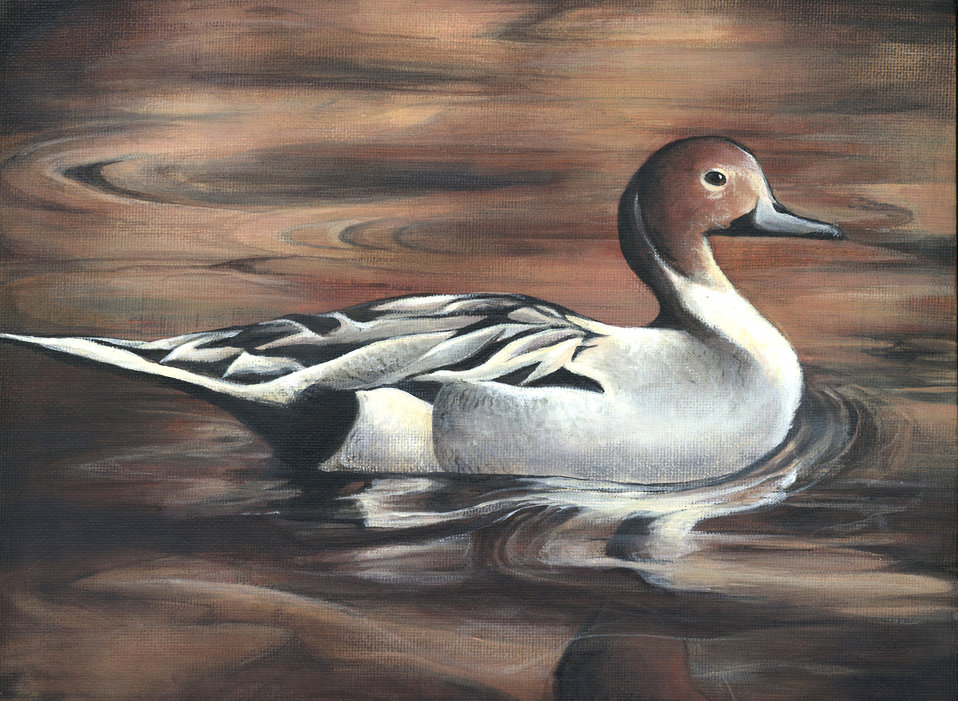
SouthDakota

2012 Jr Duck Stamp Program
State Best of Show
South Dakota